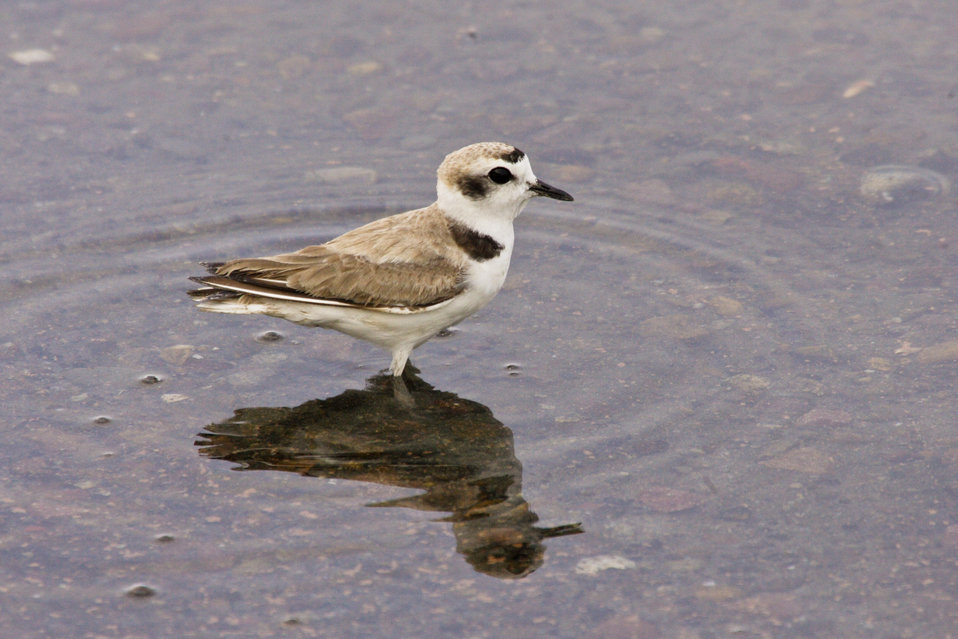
Western snowy plover (Charadrius alexandrinus nivosus)

This is and adult male plover in breeding plumage.